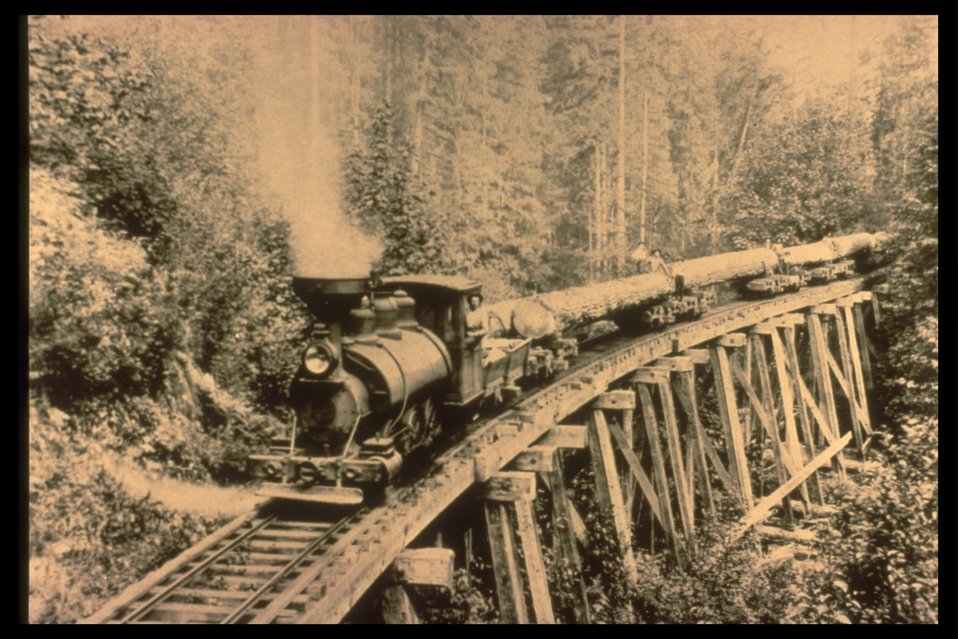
Black and white photo of an old logging train on a small wooden tressel.